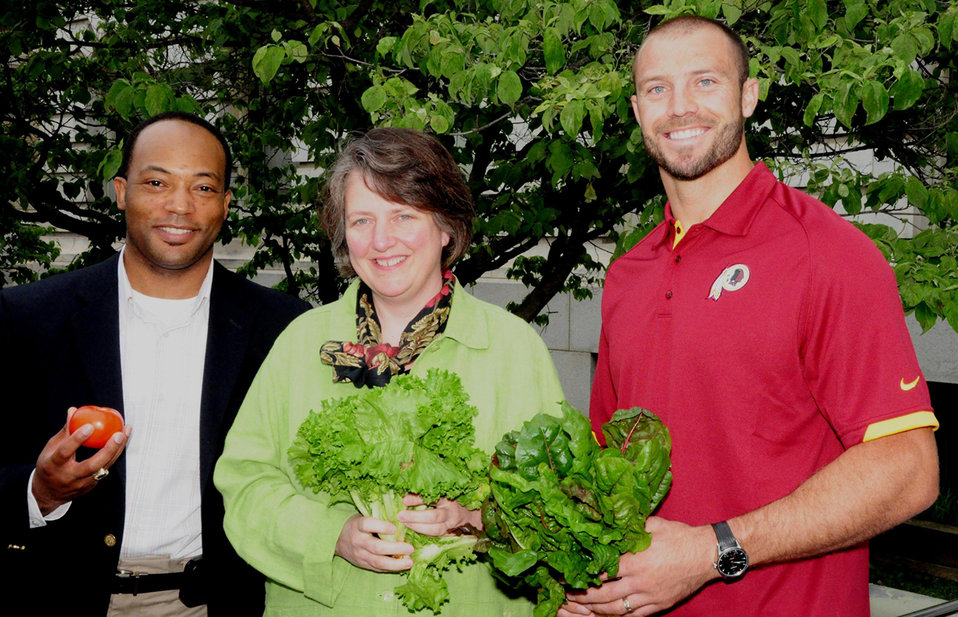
Arthur,-Dep,-Doughty-Web-2

U.S. Department of Agriculture (USDA) Agricultural Marketing Service (AMS) Transportation and Marketing Program Deputy Administrator Arthur Neal, Agriculture Deputy Secretary Kathleen Merrigan, and Washington Redskins player Reed Doughty shop at the USDA Farmers Market at 12th and Independence Ave. SW, Washington, D.C. on June 8, 2012. The market is a popular destination for local residents and visitors of the National Mall.